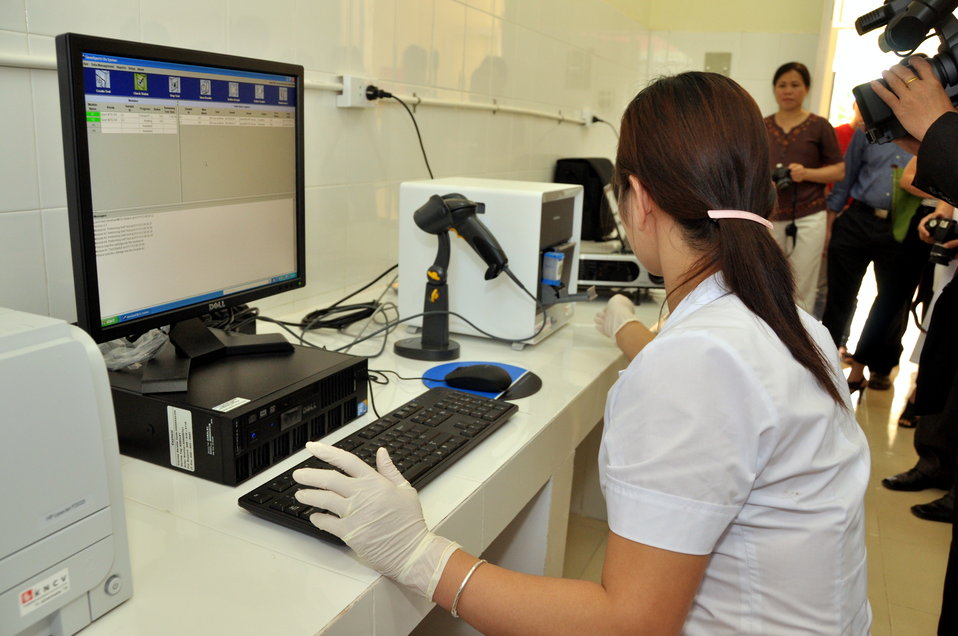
USAID supports new rapid detection TB equipment